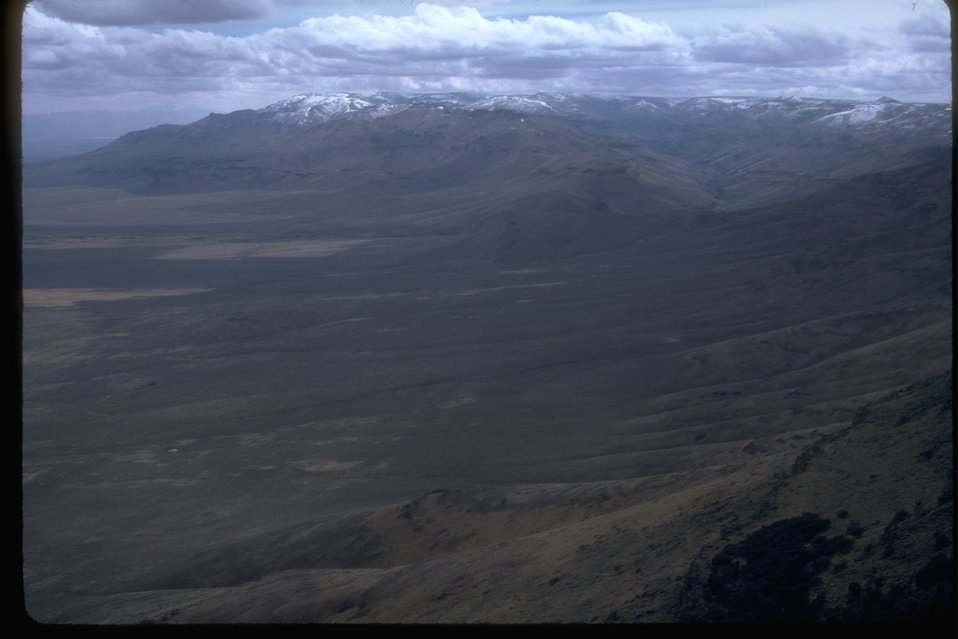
View of the Trout Creek Mountains.